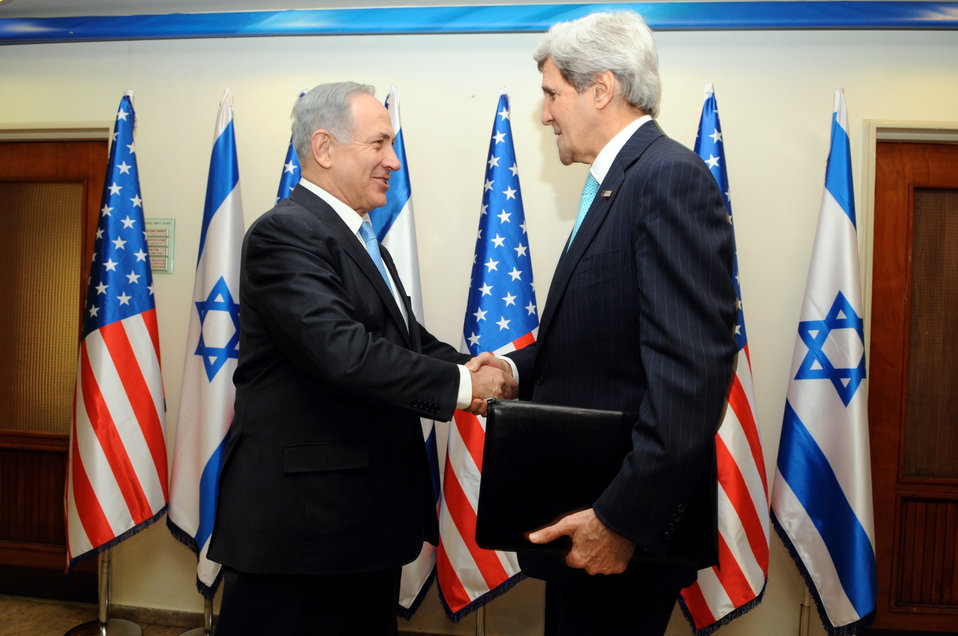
Secretary Kerry is Greeted by Israeli Prime Minister Netanyahu Upon Arrival For Peace Talks

U.S. Secretary of State John Kerry is greeted by Israeli Prime Minister Benjamin Netanyahu as he arrives at his office in Jerusalem on March 31, 2014, for peace talks with his government and Palestinian Authority leaders.